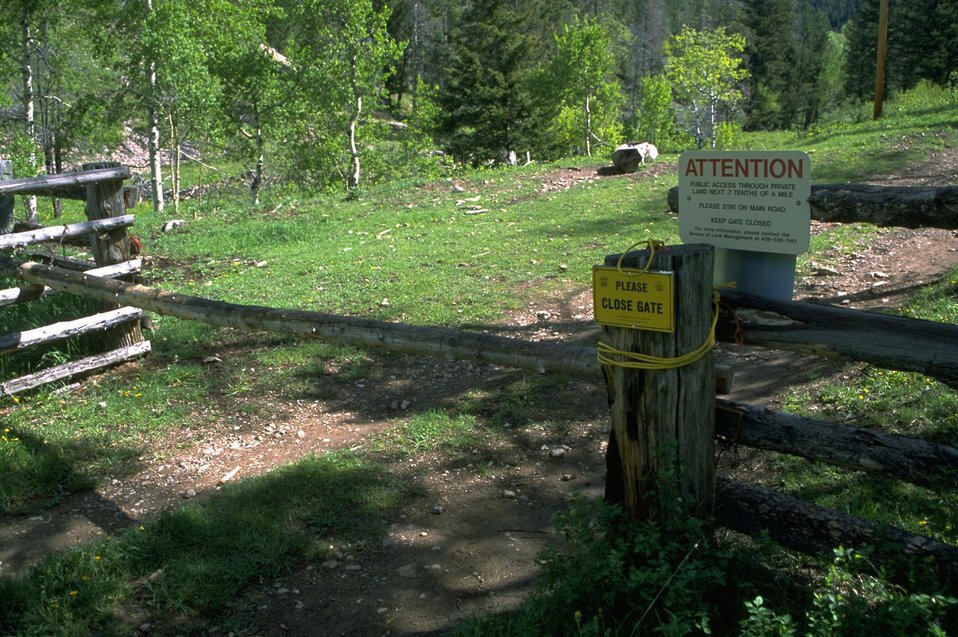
Information signs and pole gate in LimeKiln Canyon